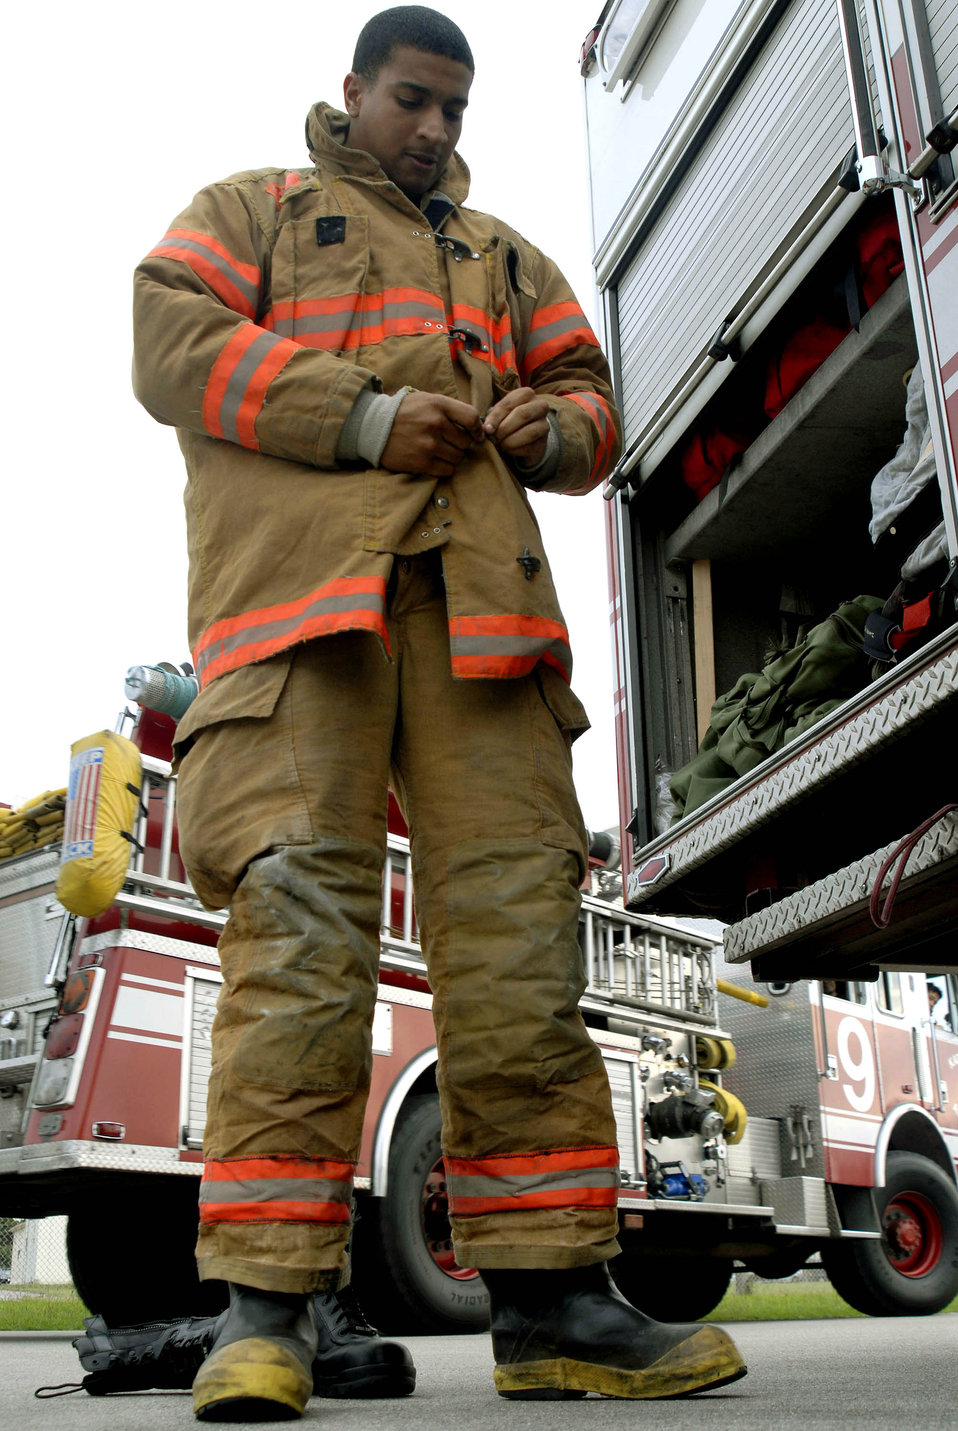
Serving through the season: Airman 1st Class Terry Roberts Jr.

Airman 1st Class Terry Roberts Jr. puts his gear on during a training event at Kadena Air Base, Japan. Airman Roberts is an 18th Civil Engineer Squadron firefighter and will be on duty during the holiday season.